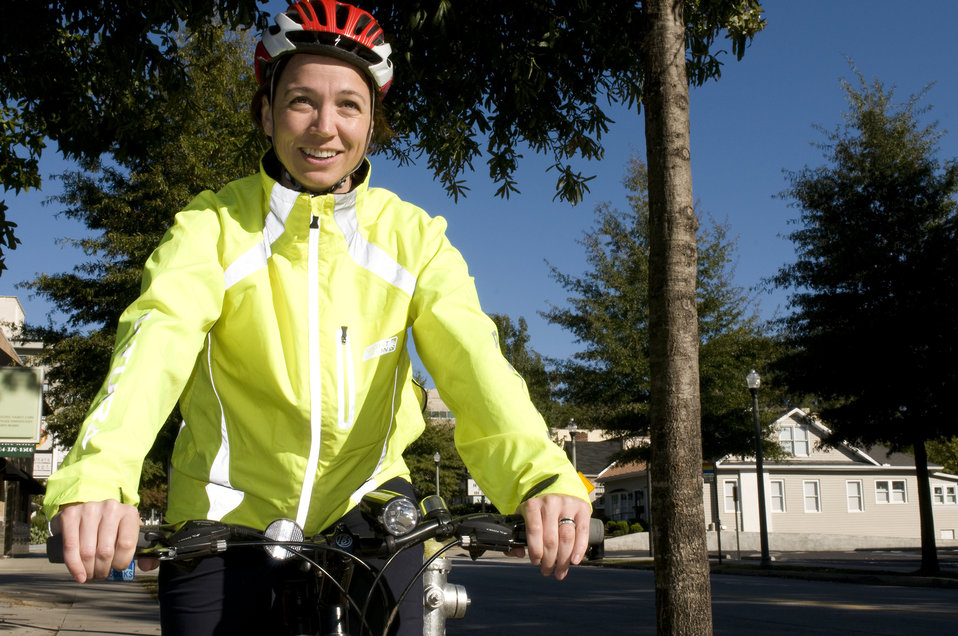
Photographed on a sunny Georgia day was this smiling female bicyclist, who was embarking on a bicycle ride. Note the brightly-colored windbreaker she was wearing, which would help drivers see her more easily, as well as the protective, aerodynamic helmet, and the snug leggings, all adding to an overall safer bike ride.